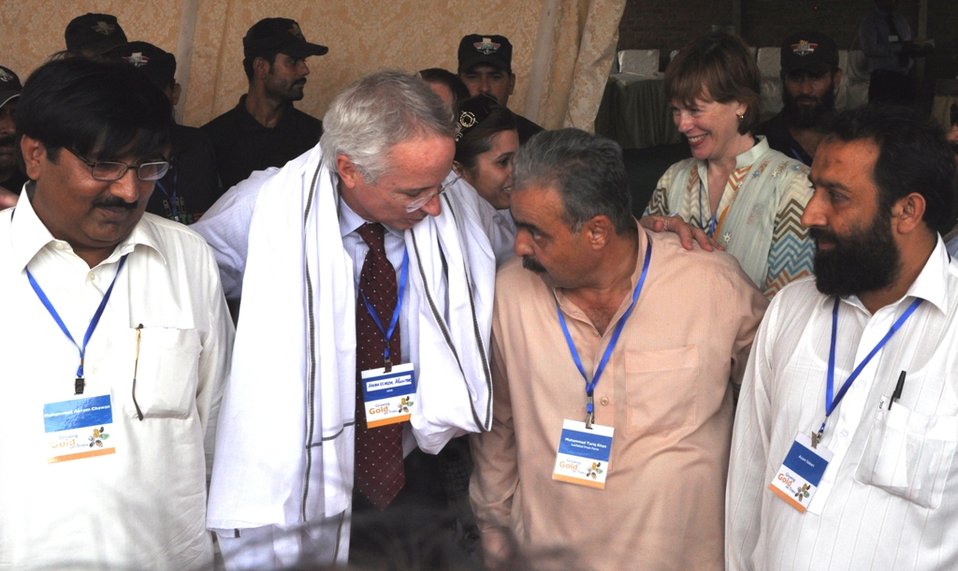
U.S. Helps Pakistani Farmers Export Mangos